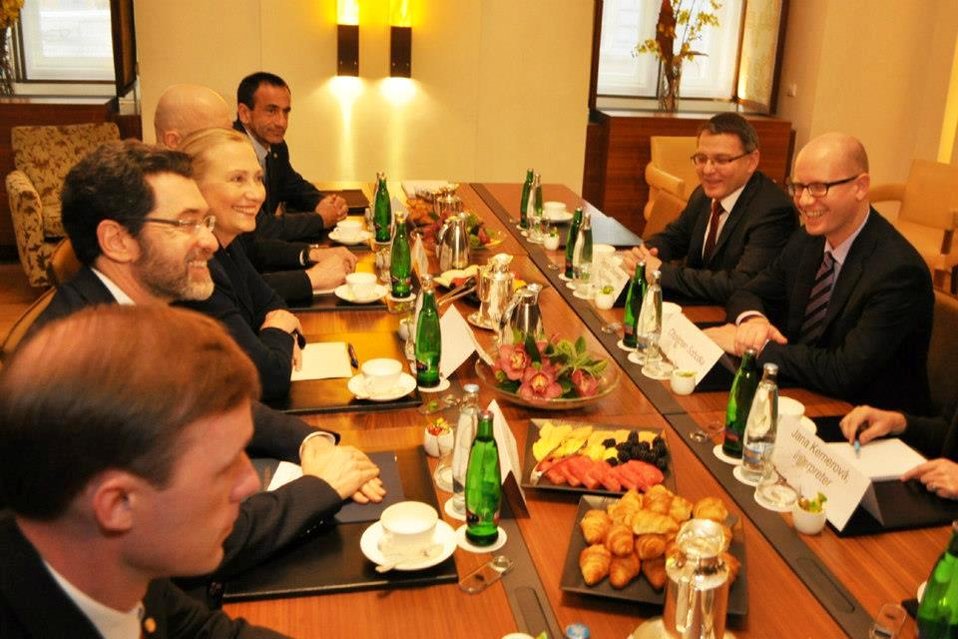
Secretary Clinton Meets With Czech Republic Social Democratic Party Leadership

U.S. Secretary of State Hillary Rodham Clinton meets with Chairman of the Czech Republic Social Democratic Party Bohuslav Sobotka, first from right, and shadow Foreign Minister Lubomir Zaoralek, second from right, in Prague, Czech Republic, December 3, 2012. Also featured is U.S. Ambassador to the Czech Republic Norman Eisen, left.